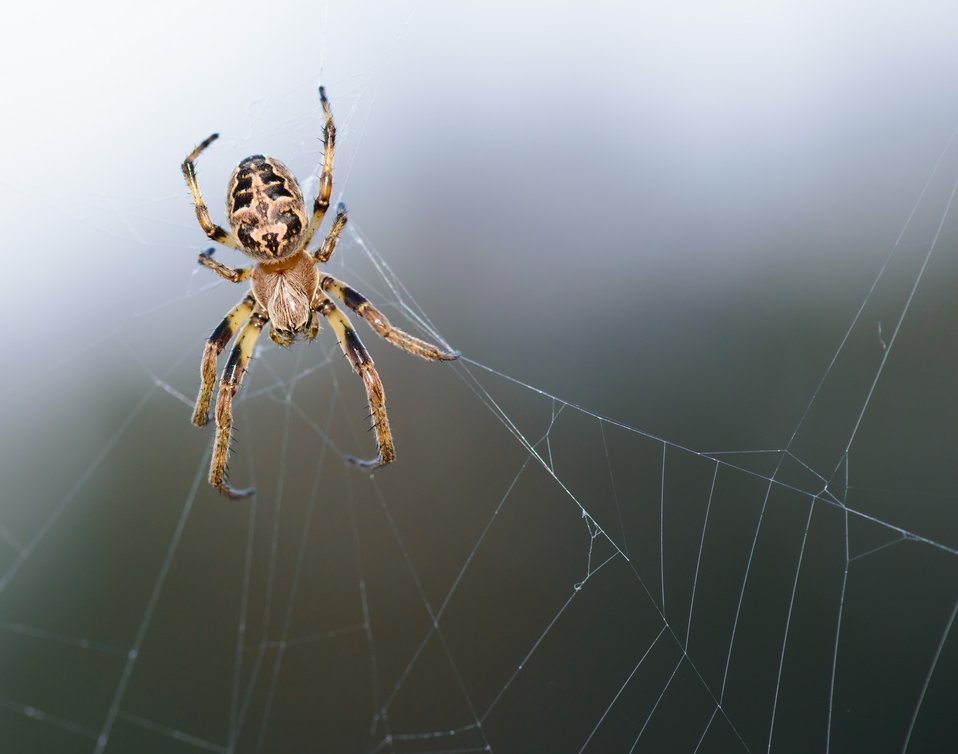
Spider luck.